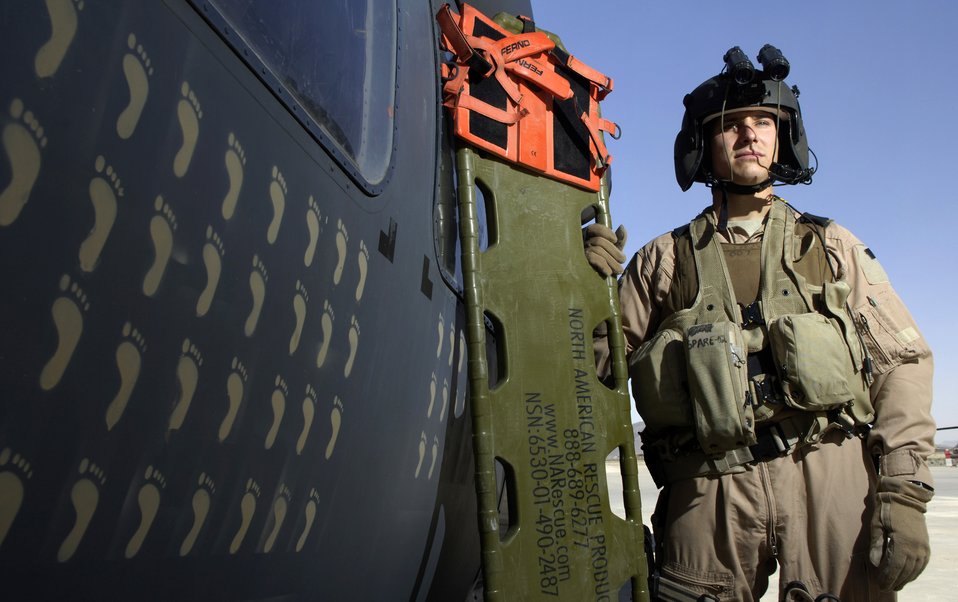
So that others may live

Tech. Sgt. Mark De Corte is an aerospace evacuation technician with the 33rd Expeditionary Rescue Squadron in Kandahar, Afghanistan. The tan footprints on the HH-60 Pavehawk helicopter represent each of the saves the squadron has made.